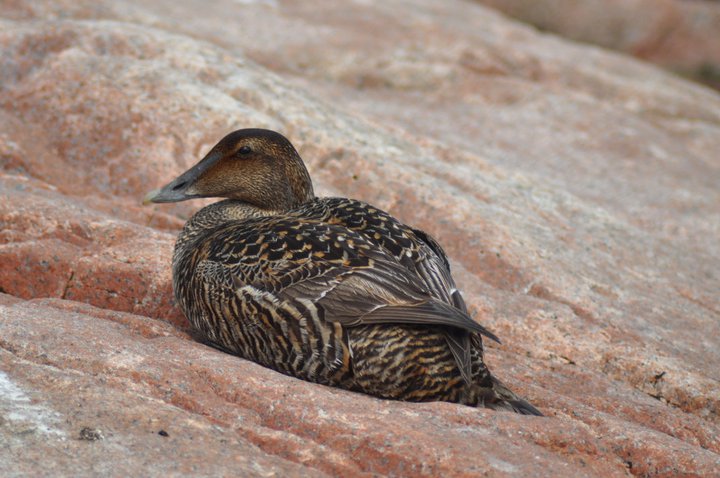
Female Common Eider

A female common eider at the Nantucket National Wildlife Refuge, MA.